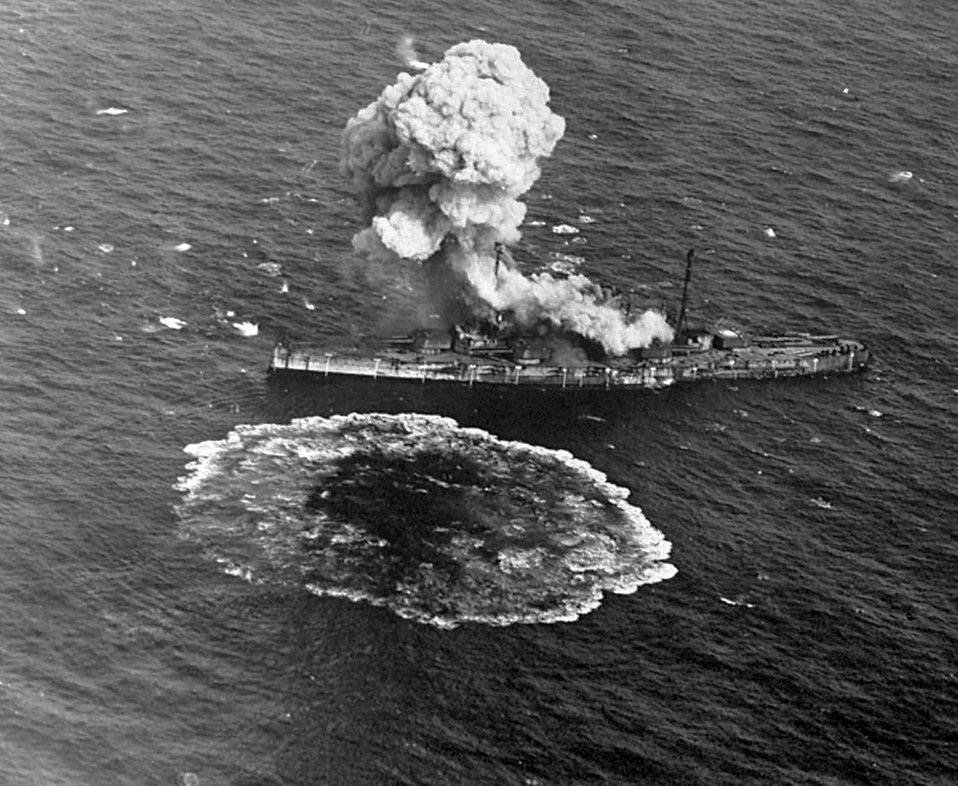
Bombing Test

July 13-21, 1921 , elements of the group were detached to General Mitchell’s 1st Provisional Air Brigade at Langley Field, Va., to conduct controversial tests to determine the efficiency of aircraft against naval